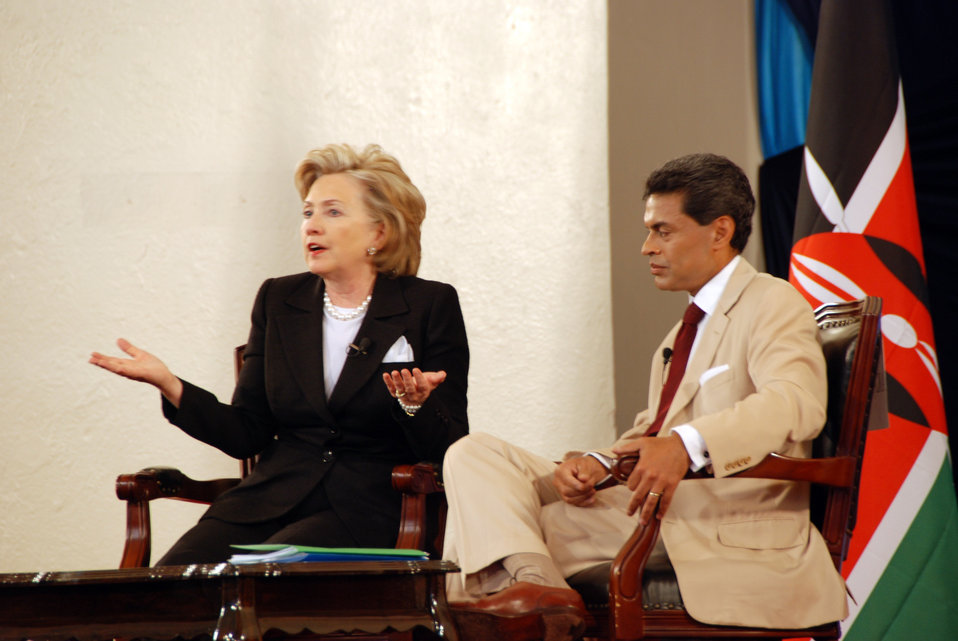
Secretary Clinton Participates in Town Hall Meeting

U.S. Secretary of State Hillary Rodham Clinton participates in a town hall meeting at the University of Nairobi in Nairobi, Kenya August 6, 2009.